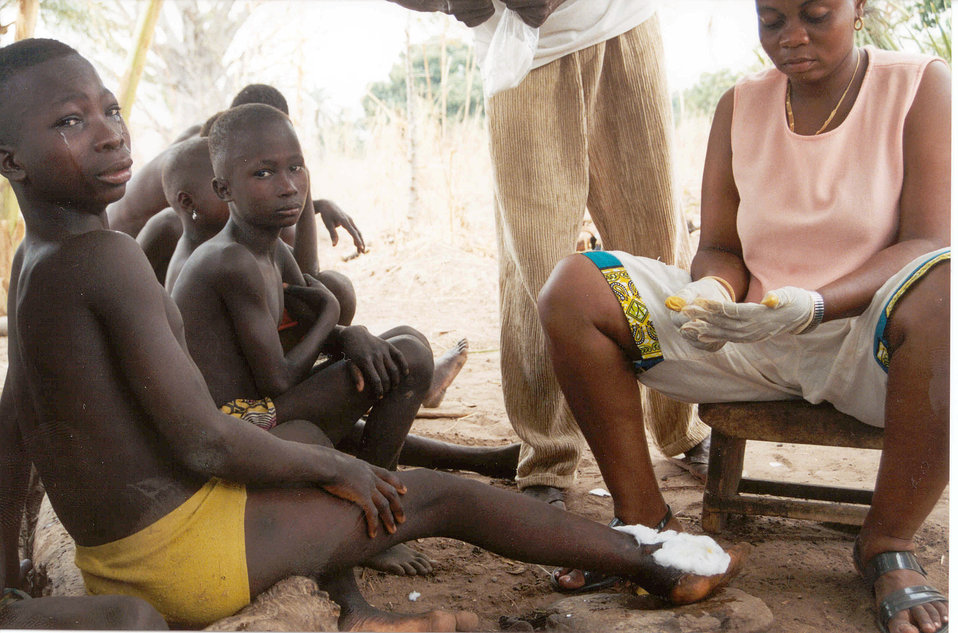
This image depicts the painful suffering of a young girl named Akouma, living in the village of Agbande in the Dofelgou District of Northern Togo, and who is infected with Guinea worm, Dracunculus medinensis. A Guinea worm field nurse named Golda is extracting an adult worm from the girl's lower right leg. The Guinea worm has migrated, over a period of approximately one year, to its site of emergence to release its eggs in a local pond or stream. Before the worm emerges, a blister develops on the skin. This blister causes a very painful burning sensation, and eventually (within 24 - 72hrs) ruptures. Once the white, spaghetti-like worm emerges from the wound, it is pulled out only a few centimeters each day, and wrapped around a small stick or piece of gauze. Sometimes a worm can be pulled out completely within a few days, but this painful process often takes weeks.